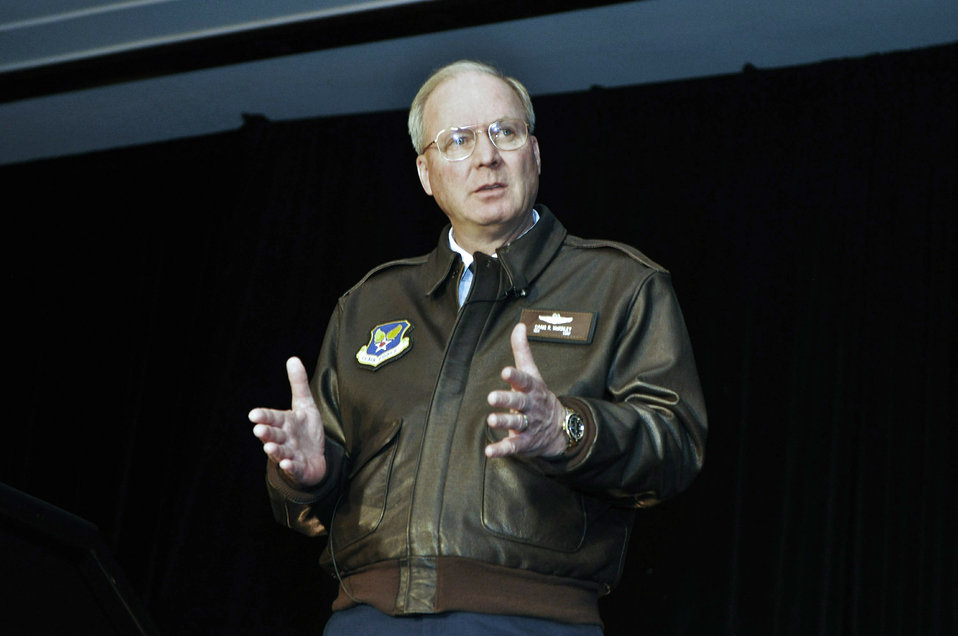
General McKinley briefing at workshop

Gen. Craig McKinley, chief of the National Guard Bureau, briefed some 700 National Guard leaders attending the National Guard's 2009 Domestic Operations Workshop March 6 in Baltimore, Md.